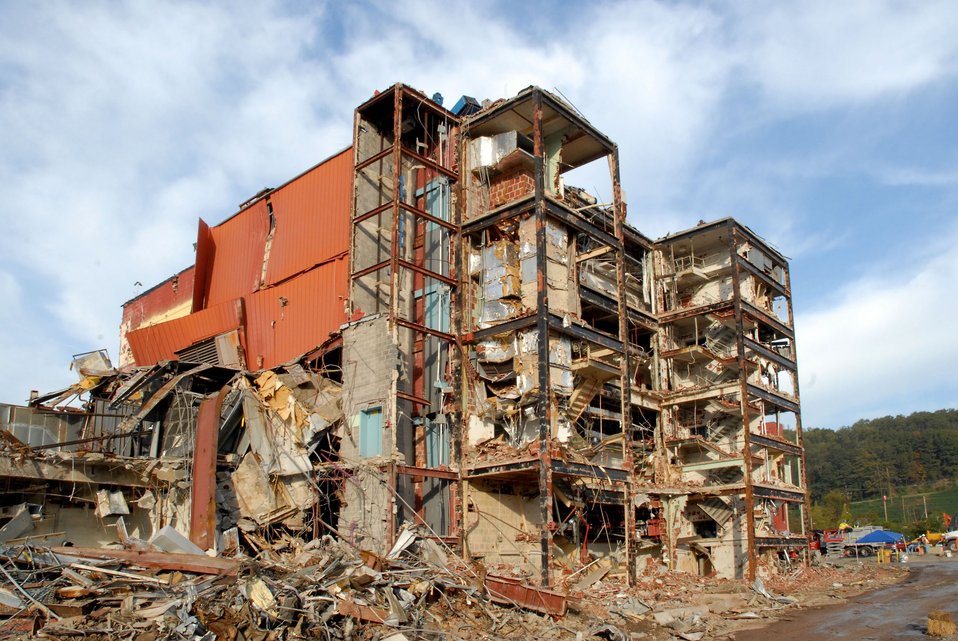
Y-12's Building 9211